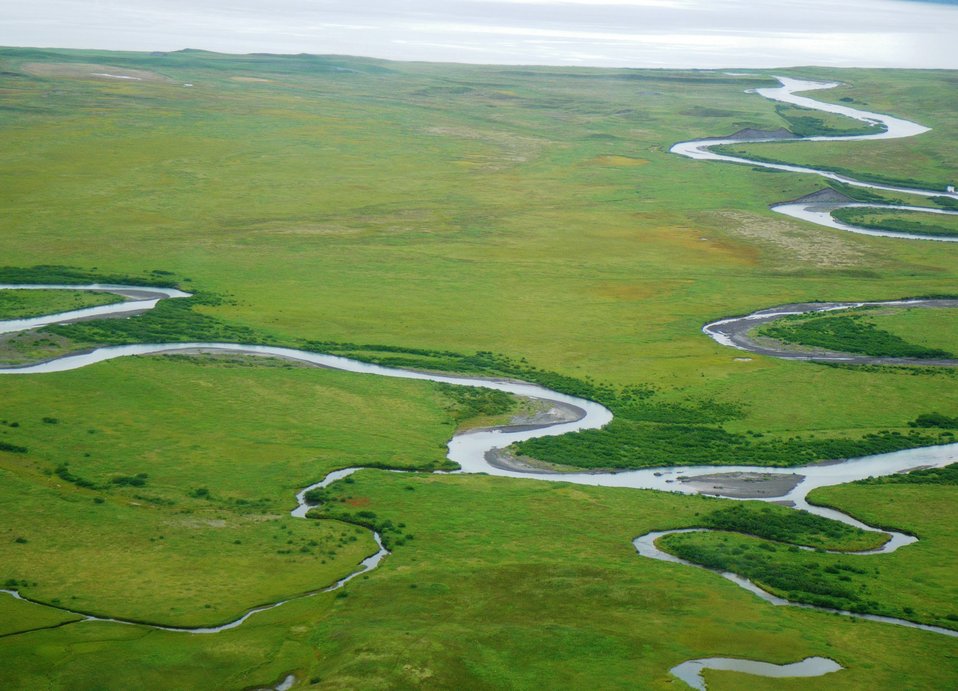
Unimak Landscapes

SE Unimak Island, Alaska Maritime National Wildlife Refuge